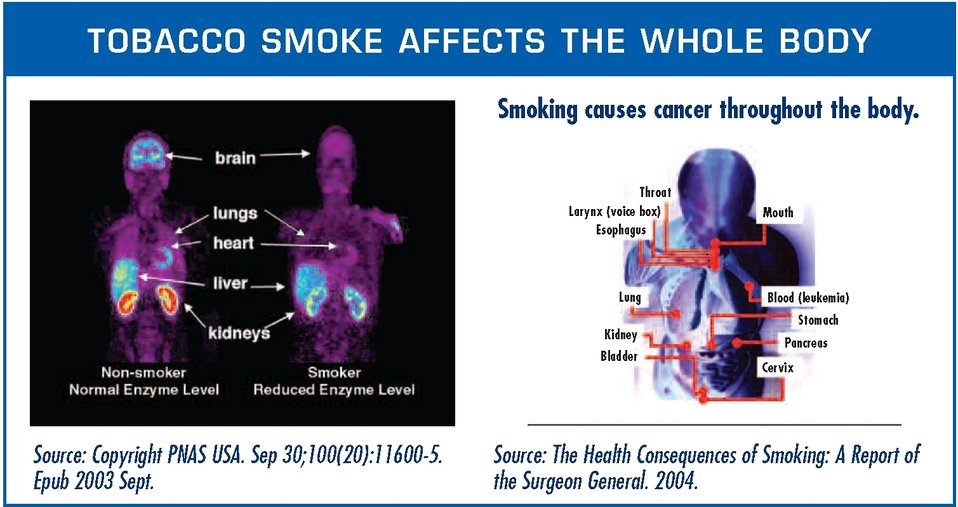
Tobacco Effects

Whole body PET image of the enzyme monoamine oxidase B (MAO B) in smokers vs. non-smokers. Note the large decreases in MAO B concentration in the brain and peripheral organs of smokers.